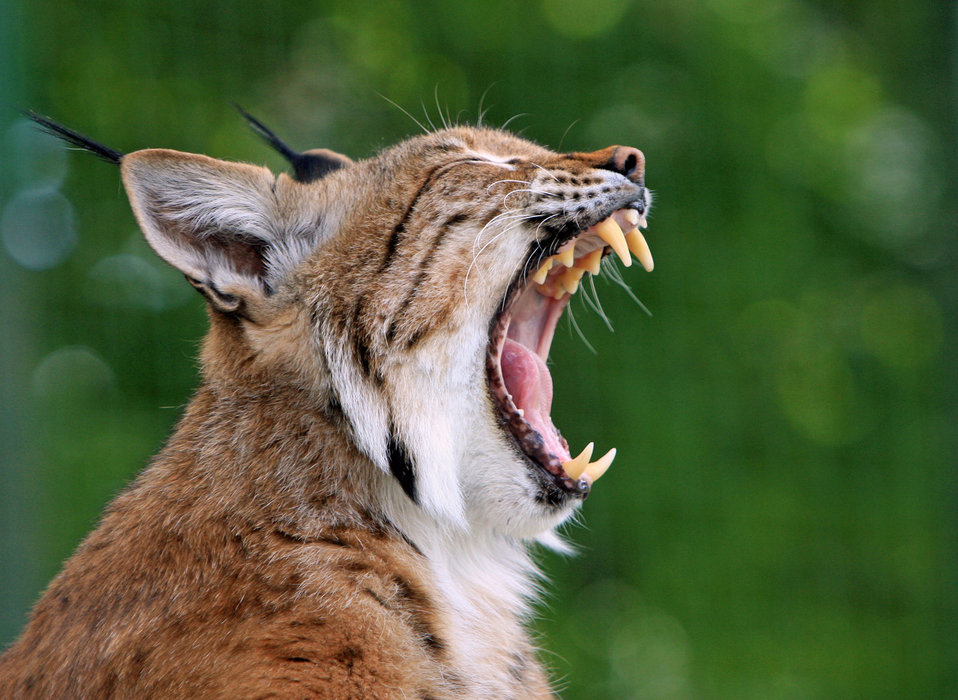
Lynx or bobcat

Close-up portrait of a bobcat or lynx yawning with mouth wide open showing teeth.